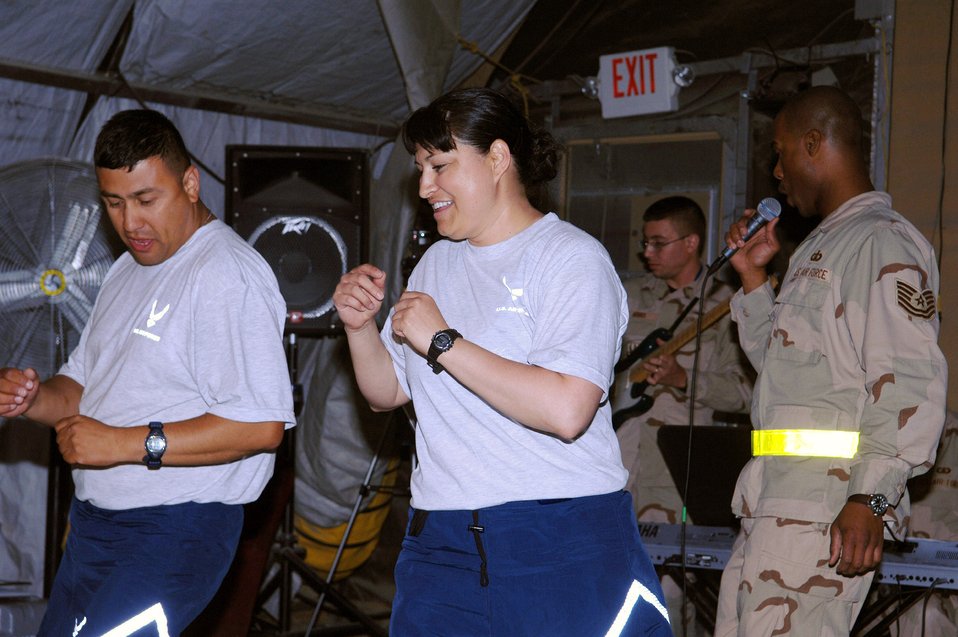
CENTAF Band performs unscheduled concert at Bagram

Capt. Nicole Chavez (middle) dances to the beat of the U.S. Central Command Air Forces Band during an impromptu performance June 19 at Bagram Air Base, Afghanistan. Captain Chavez is the 455th Expeditionary Mission Support Group executive officer.